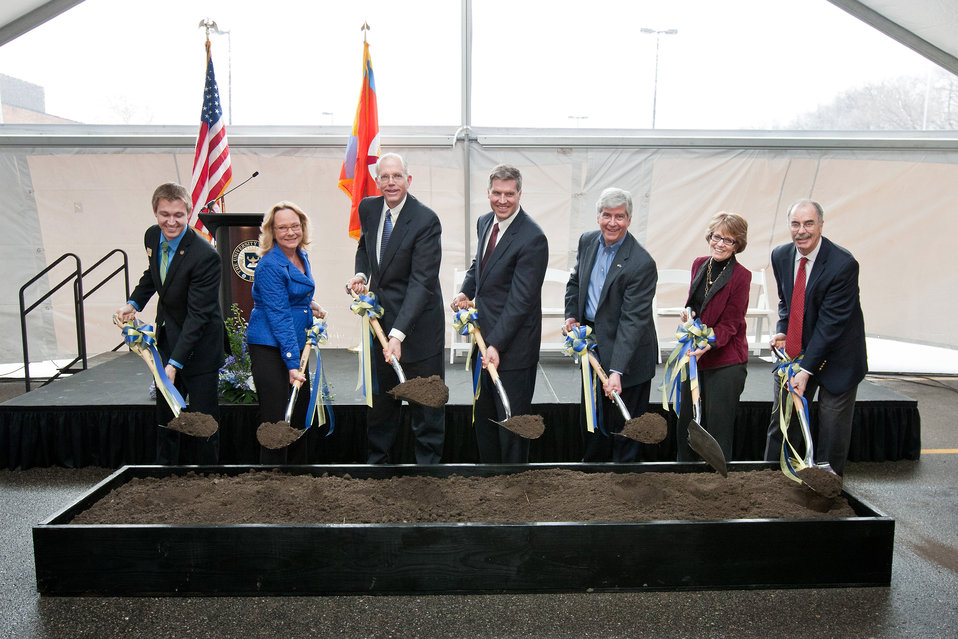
Center of Excellence in Nano Mechanical Science and Engineering Ground Breaking

Gov. Rick Snyder (third from right) joins University of Michigan officials and other guests to break ground for the new Center of Excellence in Nano Mechanical Science and Engineering, funded in part by a grant from NIST. The 62,880-square-foot addition to the G.G. Brown Laboratories will enable researchers to study the forces at work at the smallest scales and to advance nanotechnologies in energy, manufacturing, health care and biotechnology. Participating in the ceremony were, from left: Jeremy Keeny of U.S. Rep. John Dingell's office, Barbara McCallahan of U.S. Sen. Debbie Stabenow's office, College of Engineering Dean David Munson, U.S. Undersecretary of Commerce for Standards and Technology Patrick Gallagher, Snyder, President Mary Sue Coleman and Provost Phil Hanlon.